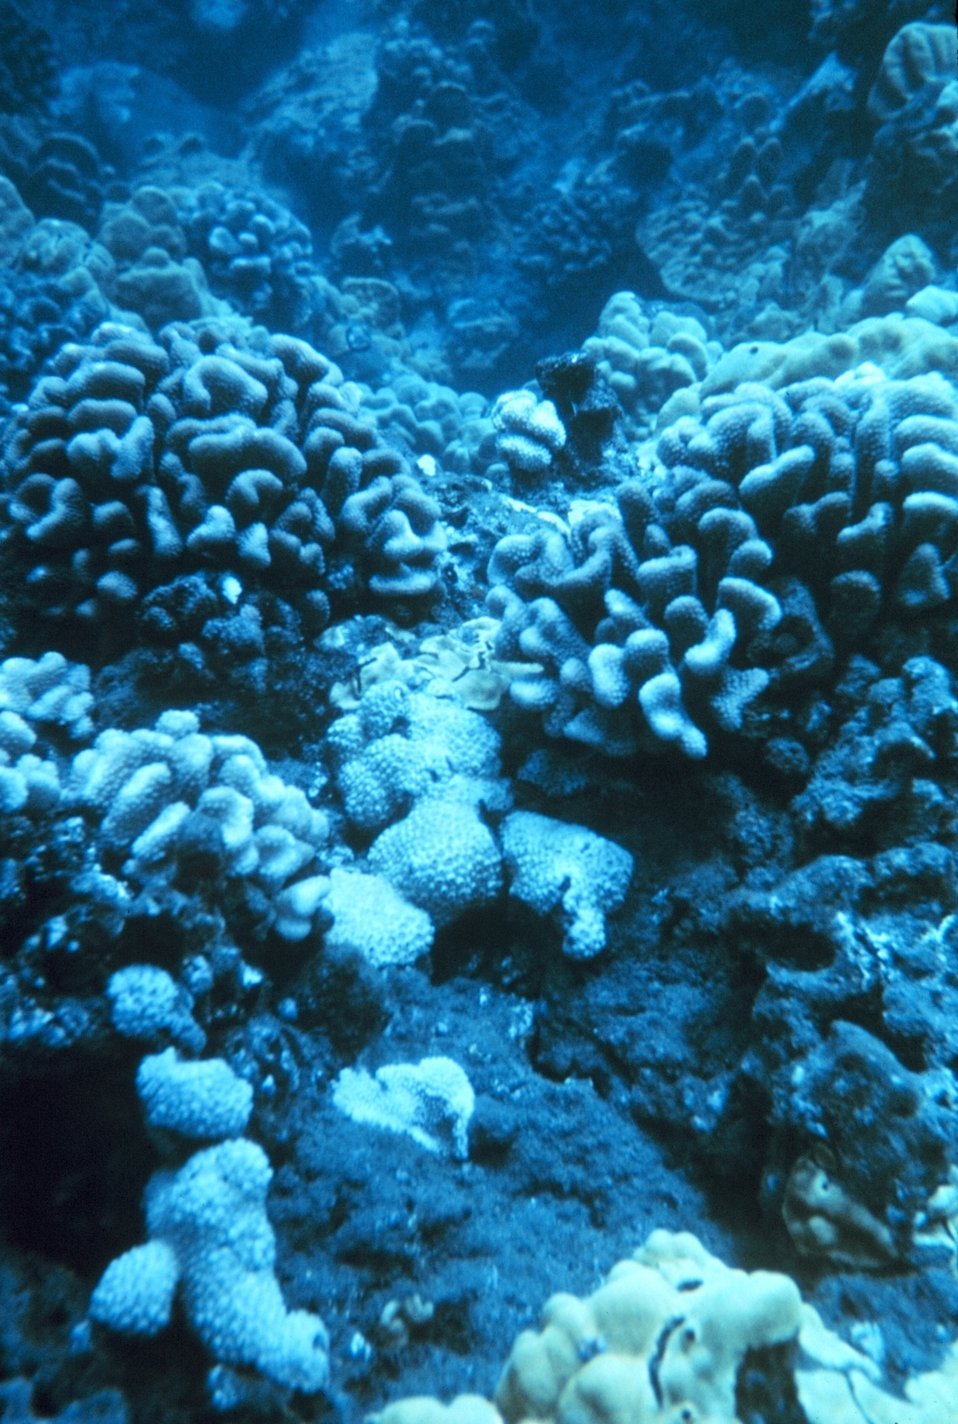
Predominantly Porites sp. coral assemblage. Large erect colonies are Porites Lobata.